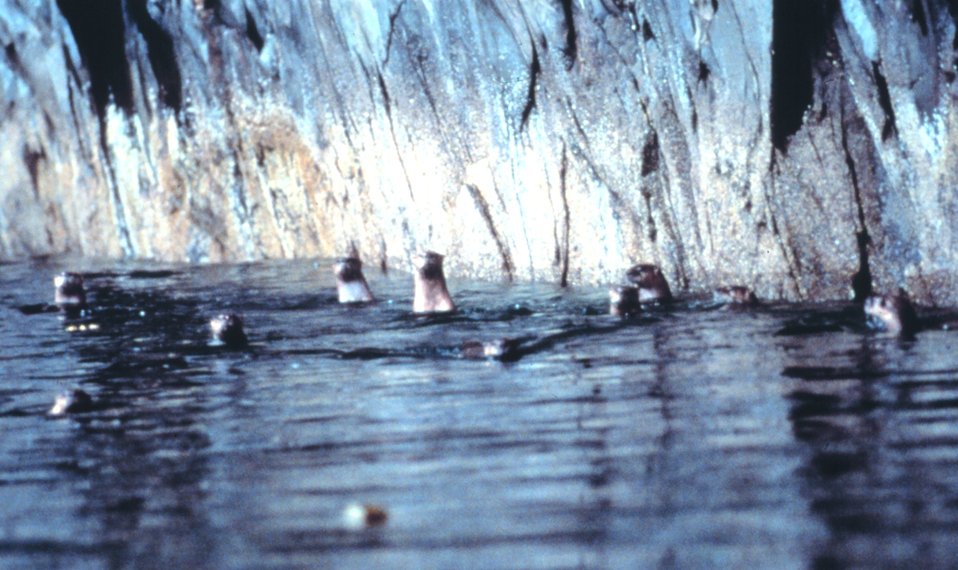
A pod of sea otters